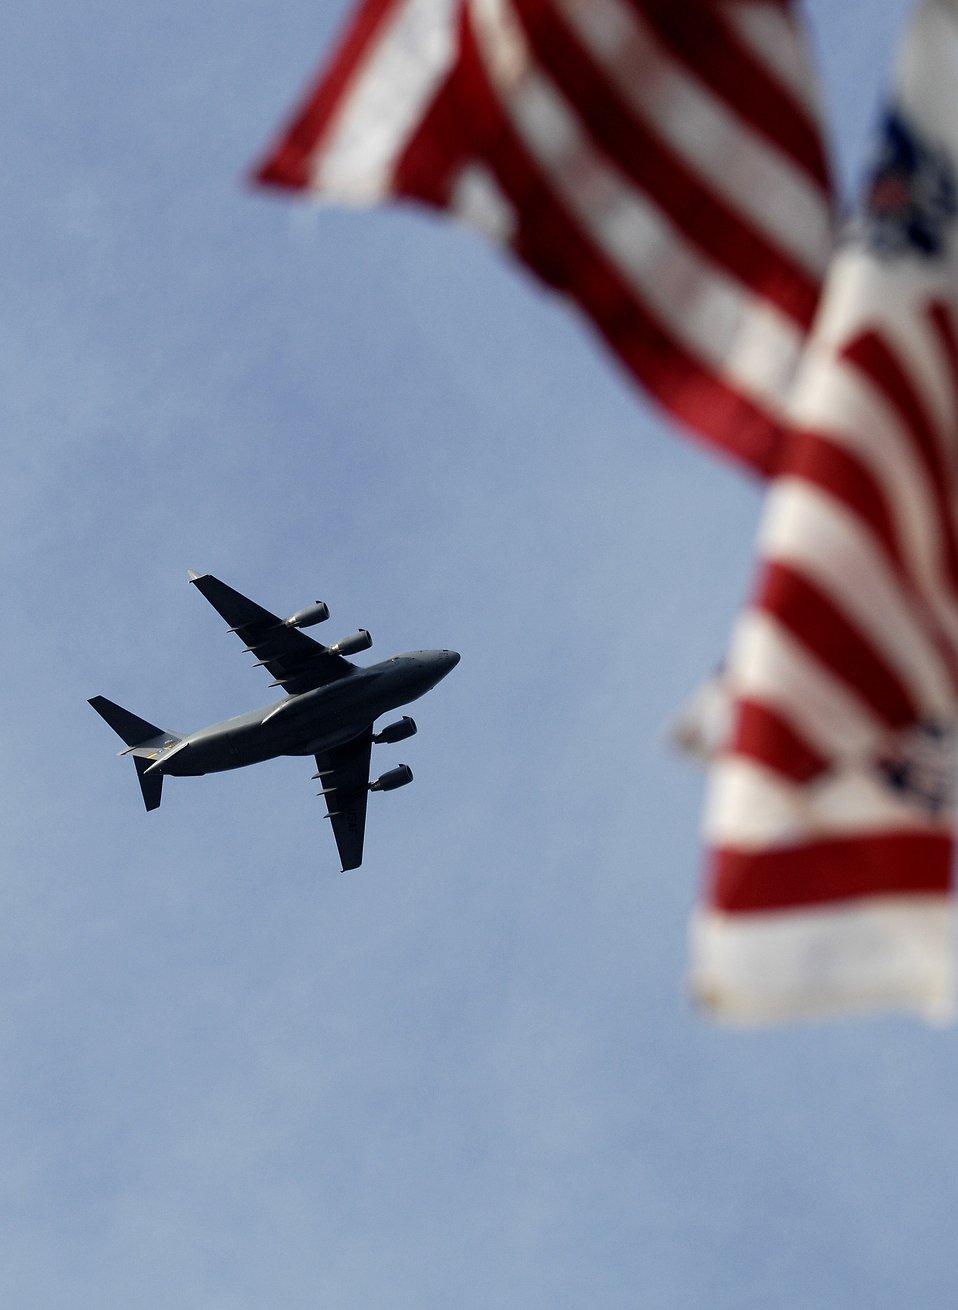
Colors

A flag is waving as a C-17 Globemaster III flies over the Arthur Ravenel Bridge in Charleston, S.C., Dec 21.